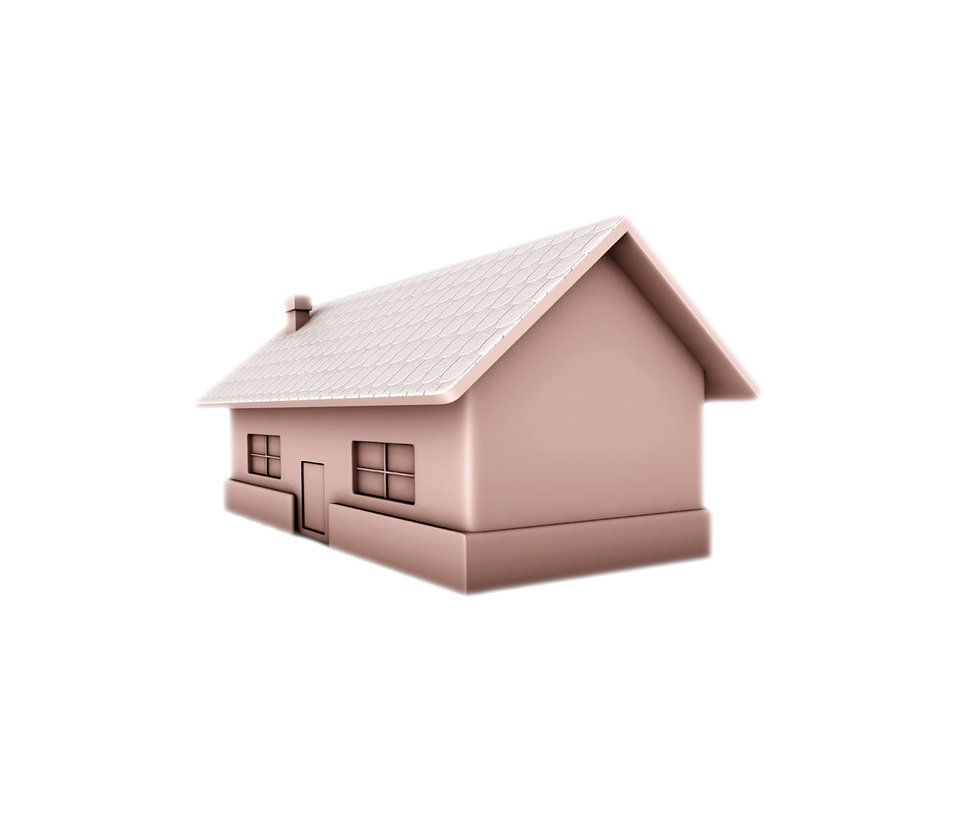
House

3d home image.